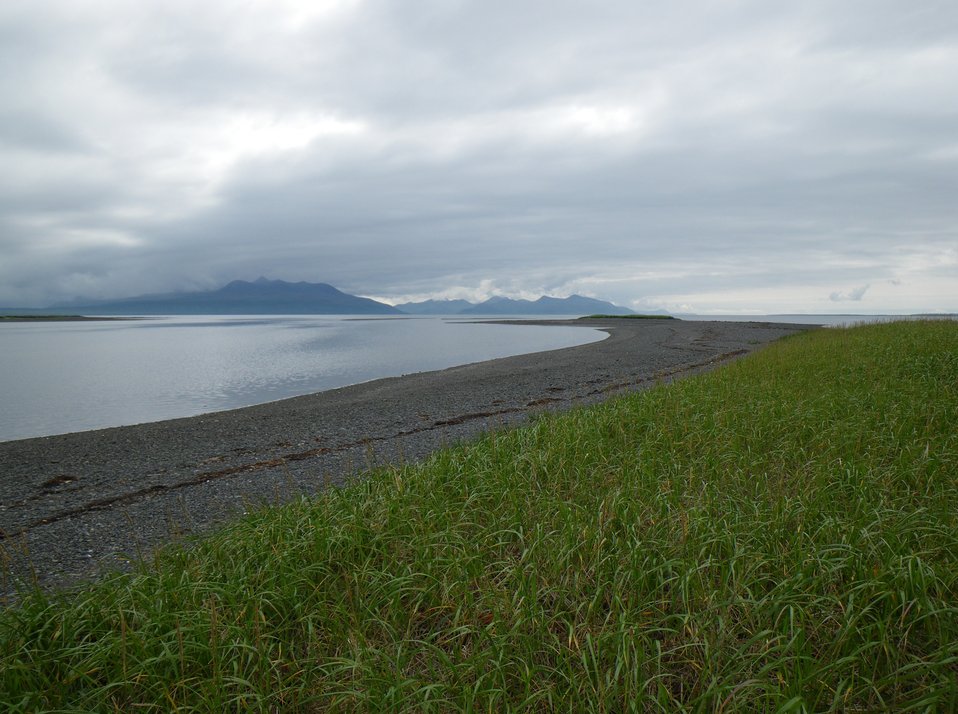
Beach in Kinzarof Lagoon

Kinzarof Lagoon, Izembek National Wildlife Refuge